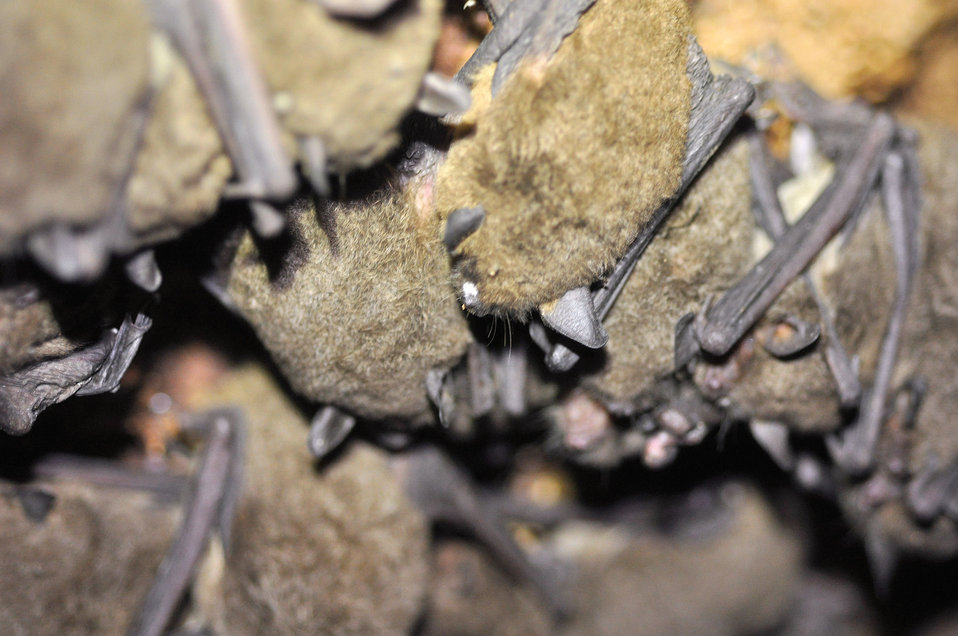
Gray bat, Montgomery Co., TN